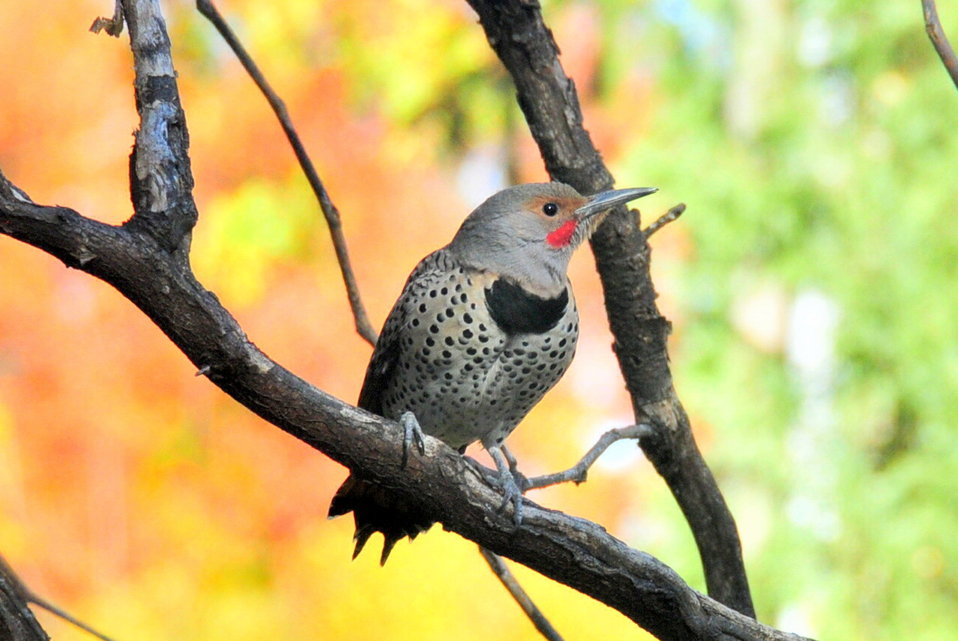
Northern Flicker